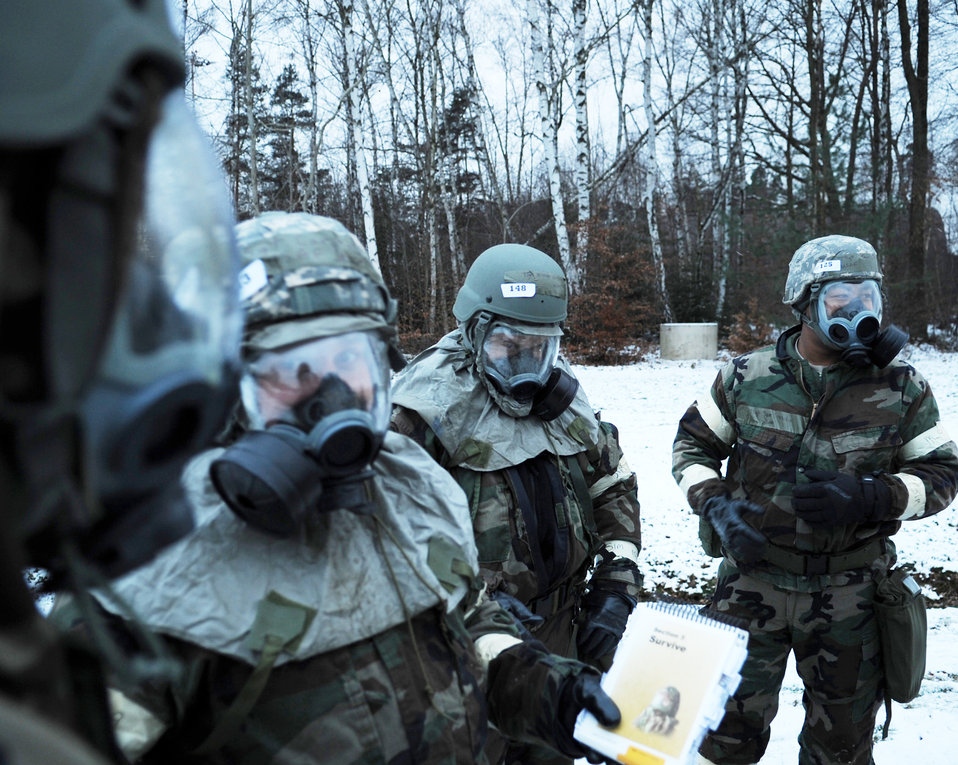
Make sure you look like this

Airmen from the 86th Airlift Wing look over the Airman's Manual while waiting for the next exercise scenario at Ramstein Air Base, Germany, Dec. 15, 2009. The wing is conducting an exercise to evaluate its mission readiness and the ability to survive and operate in a chemical environment.